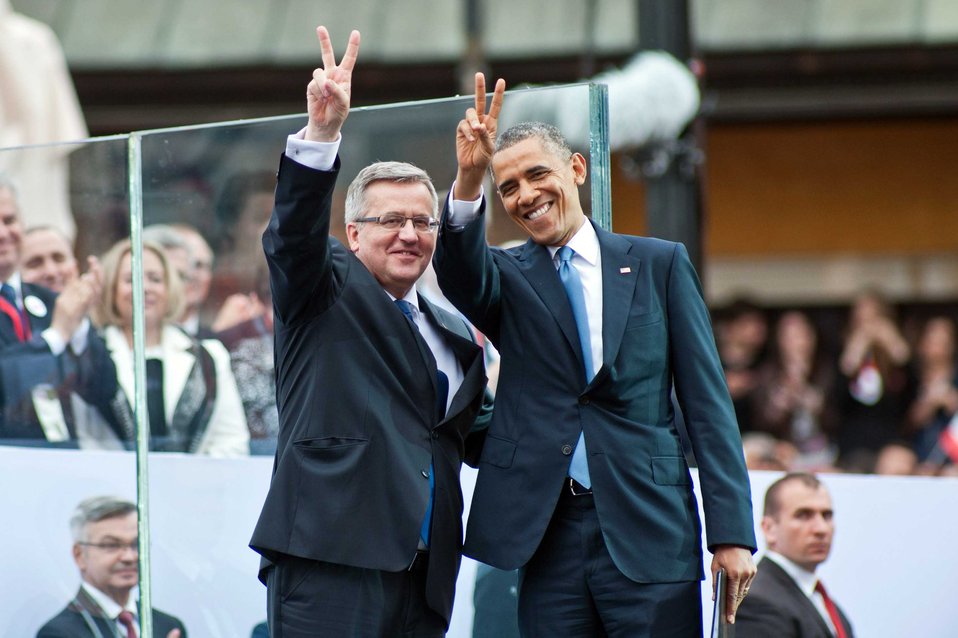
President Obama and Polish President Komorowski Participate in Celebration Marking 25th Anniversary of Freedom

U.S. President Barack Obama and Polish President Bronislaw Komorowski make the peace sign at a celebration marking the 25th anniversary of first partly free elections that led to the fall of communism at the Zamkowy (Castle) Square in Warsaw, Poland, on June 4, 2014. [U.S. Mission to Poland photo by Jakub Szymczuk]